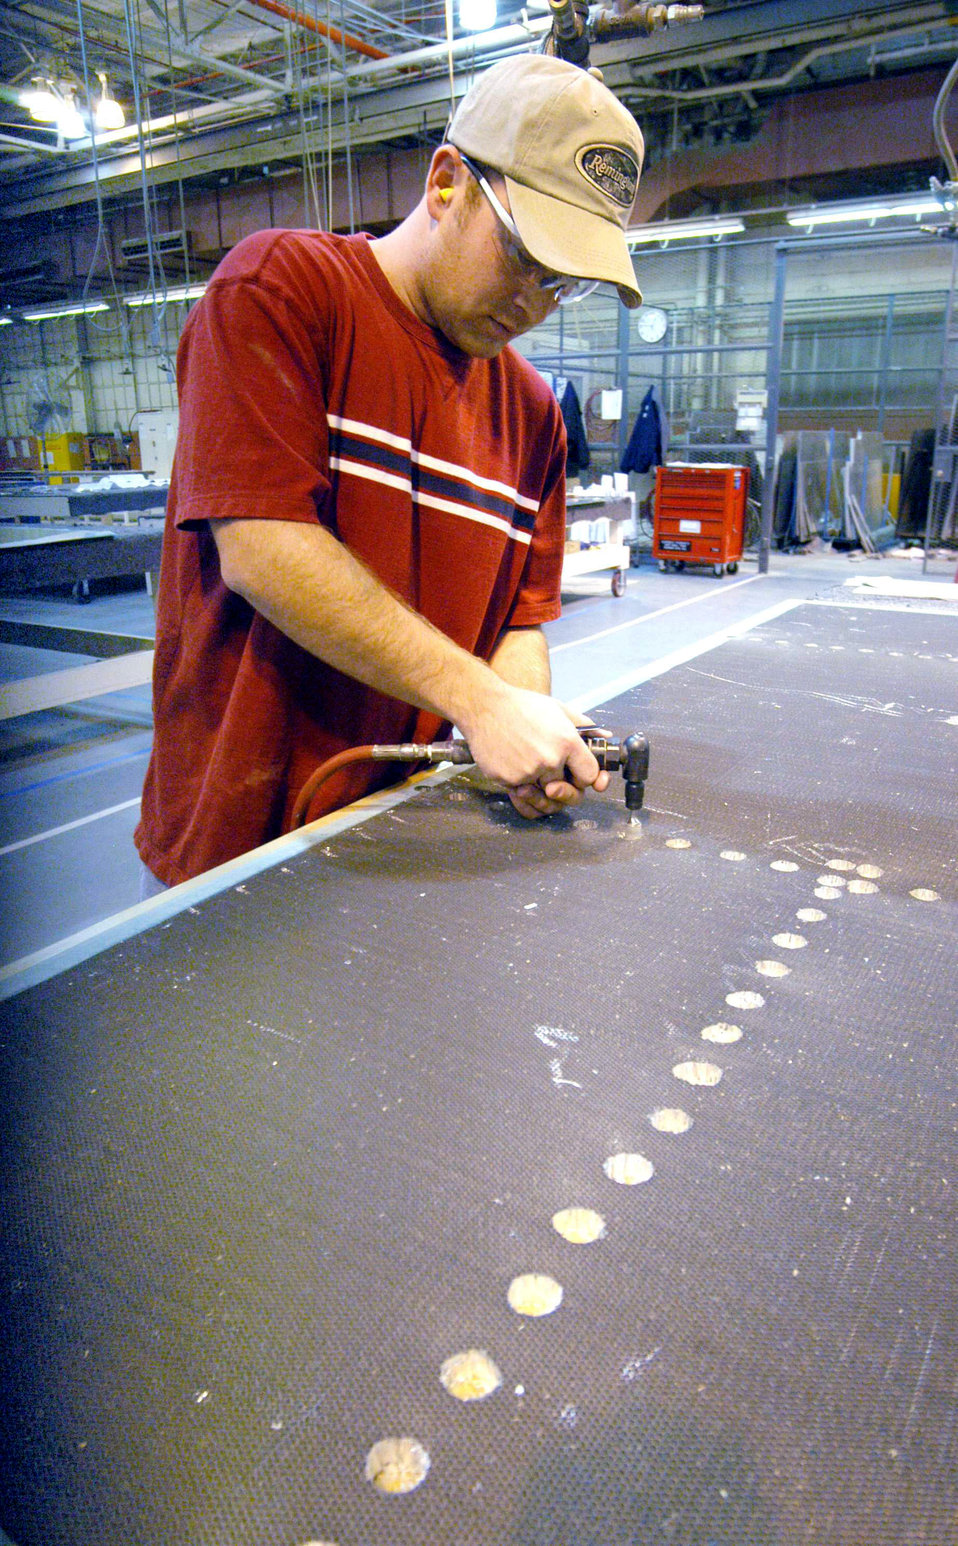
New parts can cost less than old ones

ROBINS AIR FORCE BASE, Ga. -- Heath Rowland routs out the honeycomb core of a C-5 Galaxy floorboard for fastener locations. Mechanics here found that making new aircraft floorboards rather than repairing used ones saved nearly $5.5 million per year. Mr. Rowland is a sheet metal mechanic.